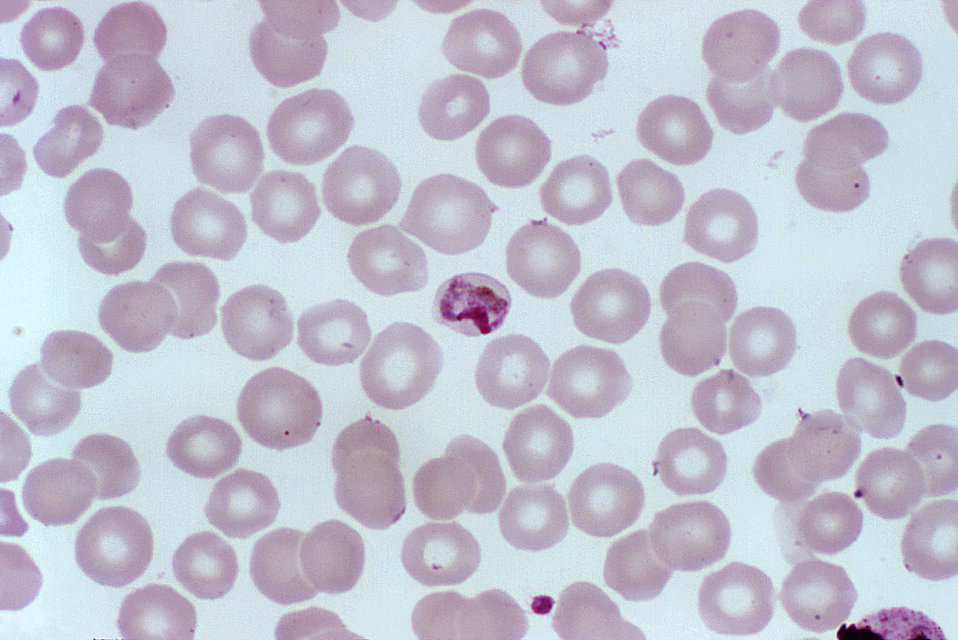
This photomicrograph shows a growing Plasmodium malariae trophozoite within an infected RBC.